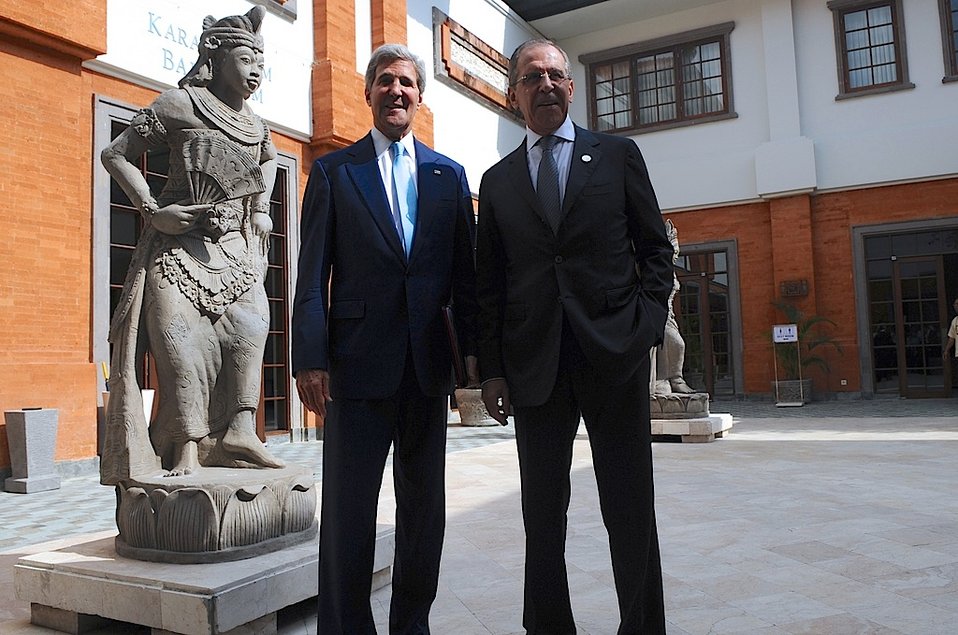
Secretary Kerry and Russian Foreign Minister Lavrov Attend APEC Meetings in Indonesia

U.S. Secretary of State John Kerry and Russian Foreign Minister Sergey Lavrov stand for photographers before holding a one-on-one discussion on the margins of the APEC Leaders meeting in Bali, Indonesia, October 7, 2013.